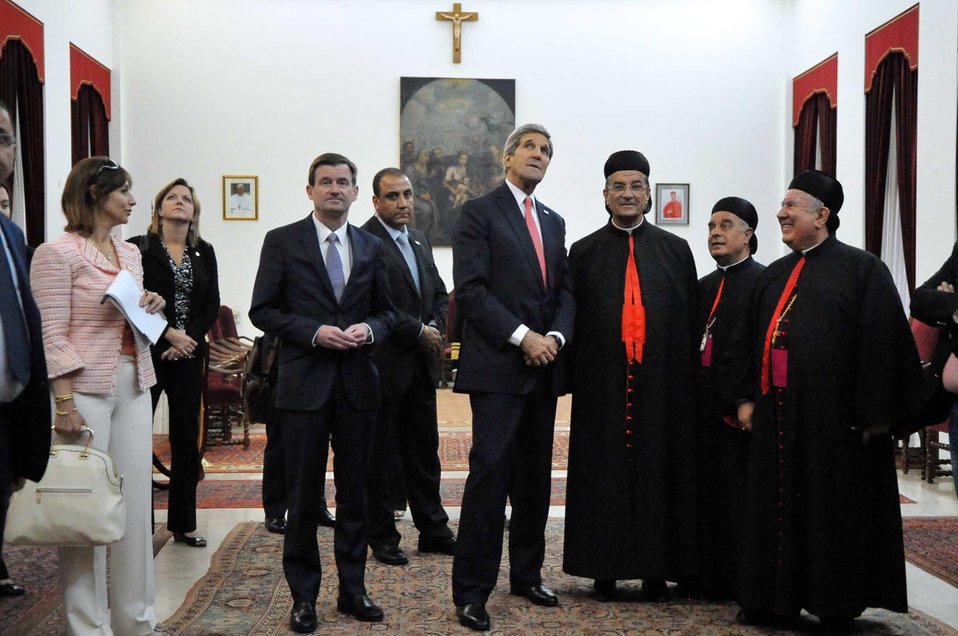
Christian Maronite Patriarch Rai Shows Secretary Kerry Paintings at Archdiocese in Beirut

Christian Maronite Patriarch Beshara Rai shows U.S. Secretary of State John Kerry paintings at the Archdiocese in Beirut, Lebanon, on June 4, 2014.